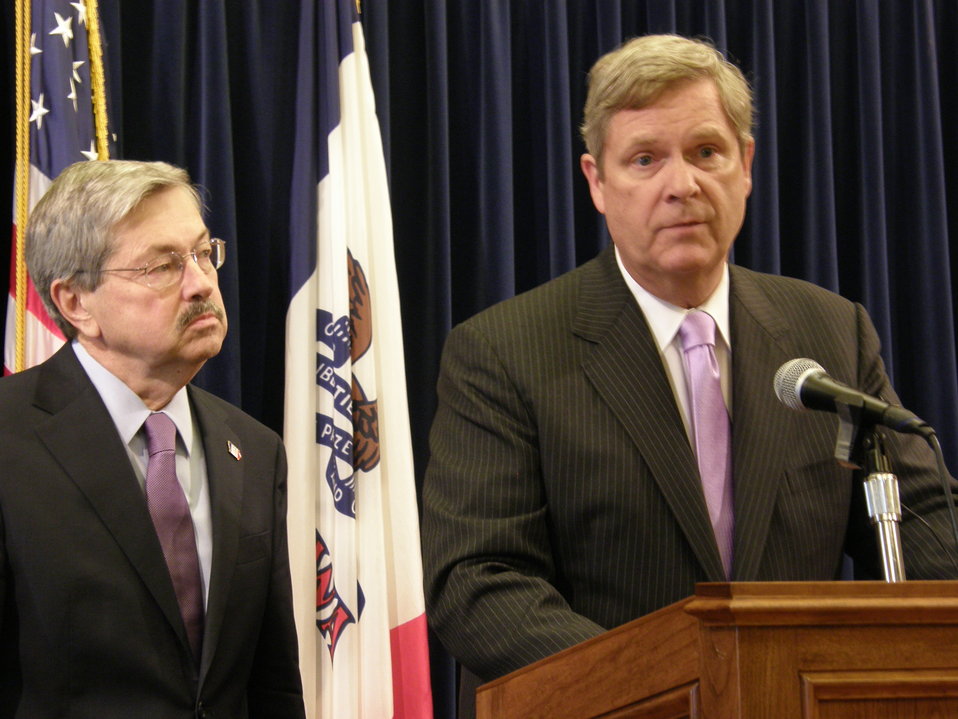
Agriculture Secretary Tom Vilsack (right) and Iowa Governor Terry Branstad held a joint press conference to clarify facts surrounding Beef Products Inc.’s lean finely textured beef. The press conference was held in the Governor’s Large Conference Room, State Capitol, Des Moines, IA.